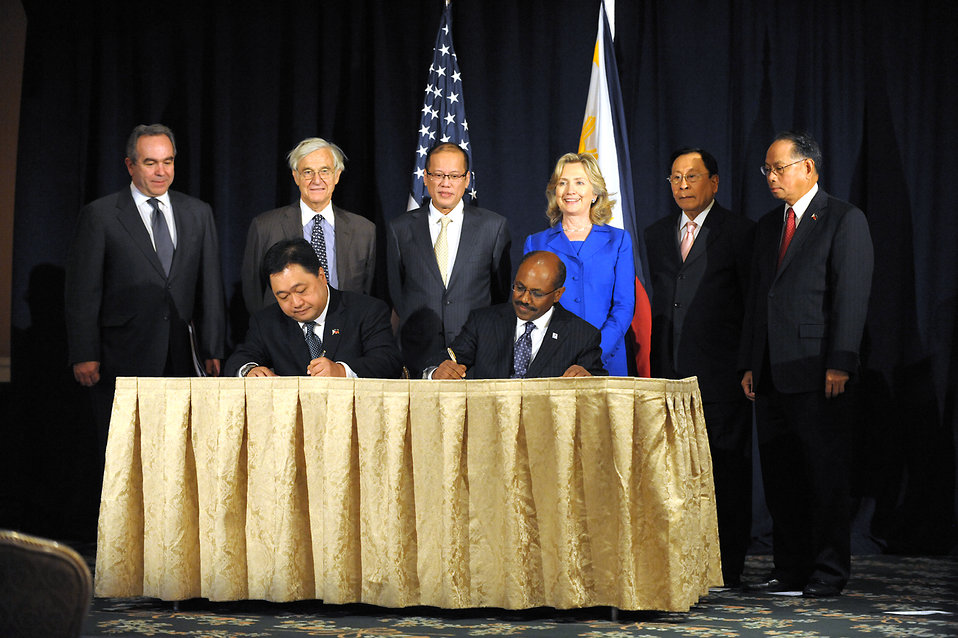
Secretary Clinton and Assistant Secretary Campbell Pose for a Photo at a Millennium Challenge Corporation Signing Ceremony With Philippine President Aquino

U.S. Secretary of State Hillary Rodham Clinton and U.S. Secretary of State Kurt M. Campbell (far left) pose for a photo at a Millennium Challenge Corporation signing ceremony with Philippine President Aquino at the Waldorf-Astoria in New York, New York, on September 23, 2010.